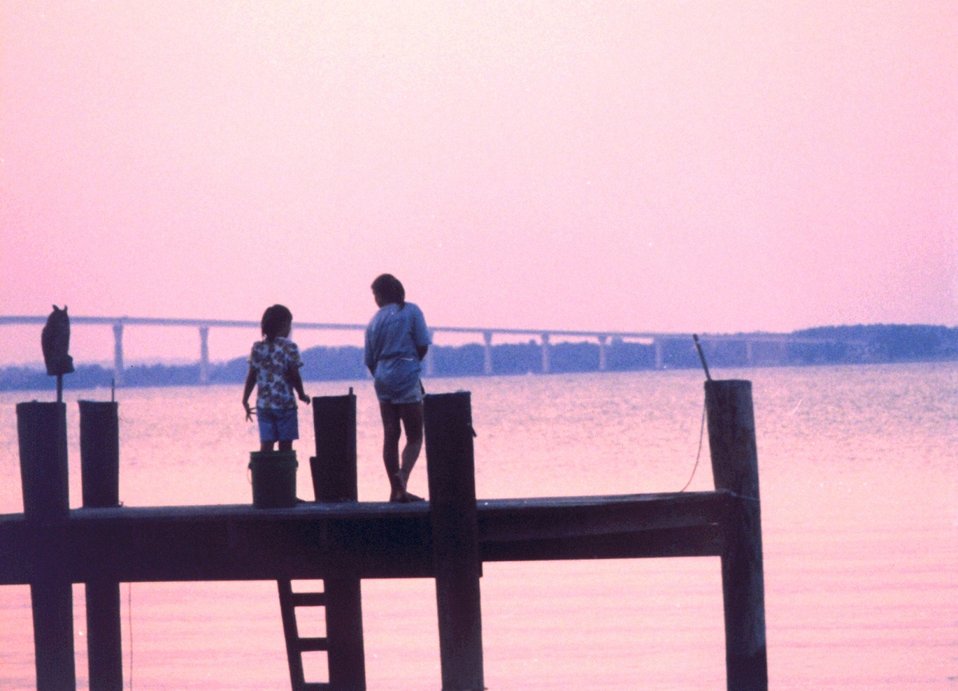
Sunset on the pier.